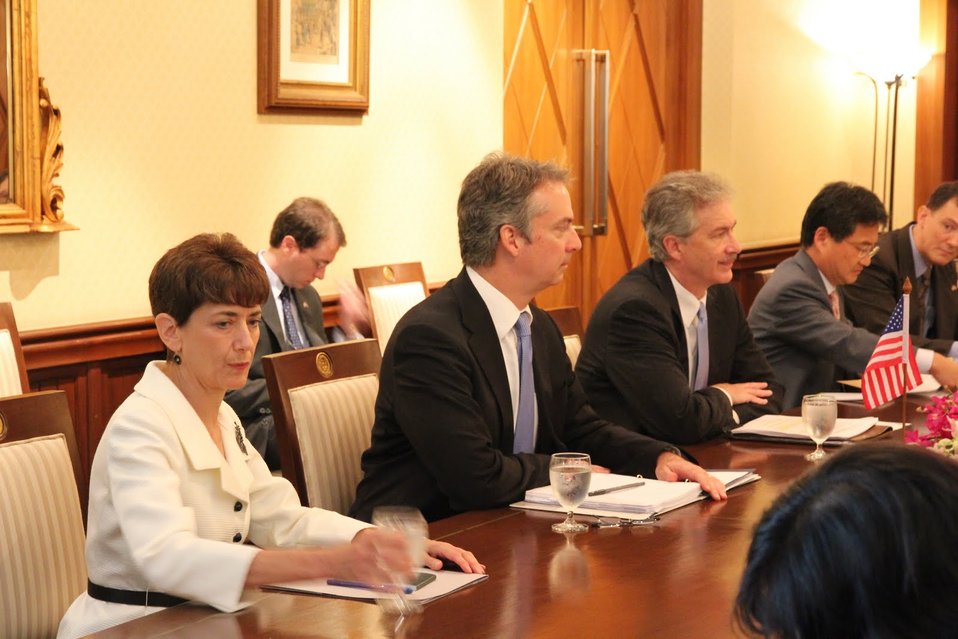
Under Secretary Burns, Ambassador John, and Thai Foreign Minister Kasit Piromya Participate in a Meeting

Under Secretary for Political Affairs William J. Burns and U.S. Ambassador to Thailand Eric G. John participate in a meeting with Thai senior government officials, including Thai Foreign Minister Kasit Piromya, at the Thai Ministry of Foreign Affairs in Bangkok, Thailand, on July 16, 2010.